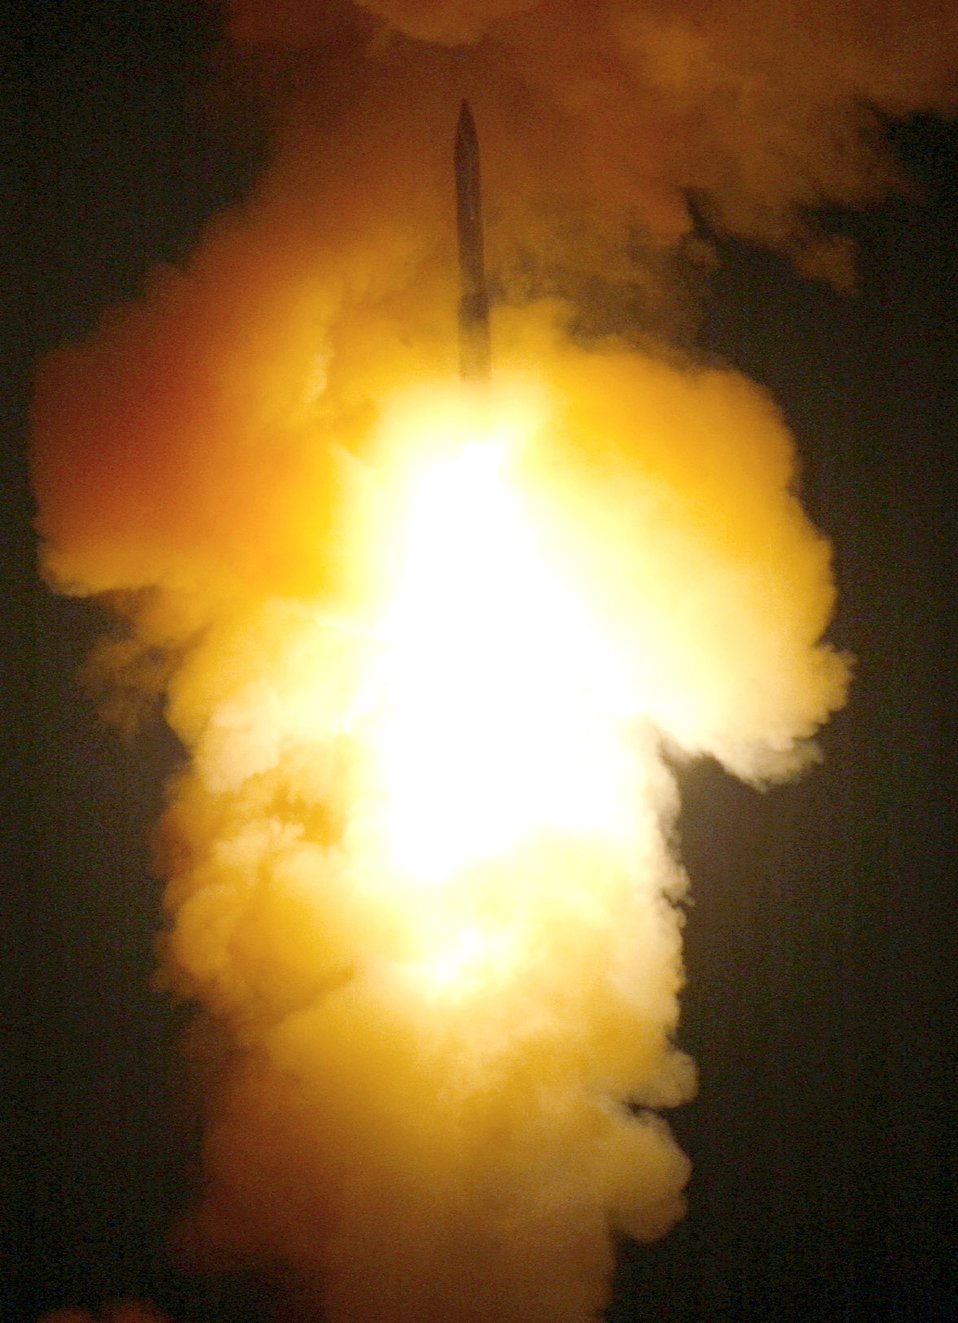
Vandenberg team launches Minuteman III

An unarmed Minuteman III intercontinental ballistic missile lifts off from Vandenberg Air Force Base, Calif., Feb. 7 during an operational test to determine the weapon system's reliability and accuracy.